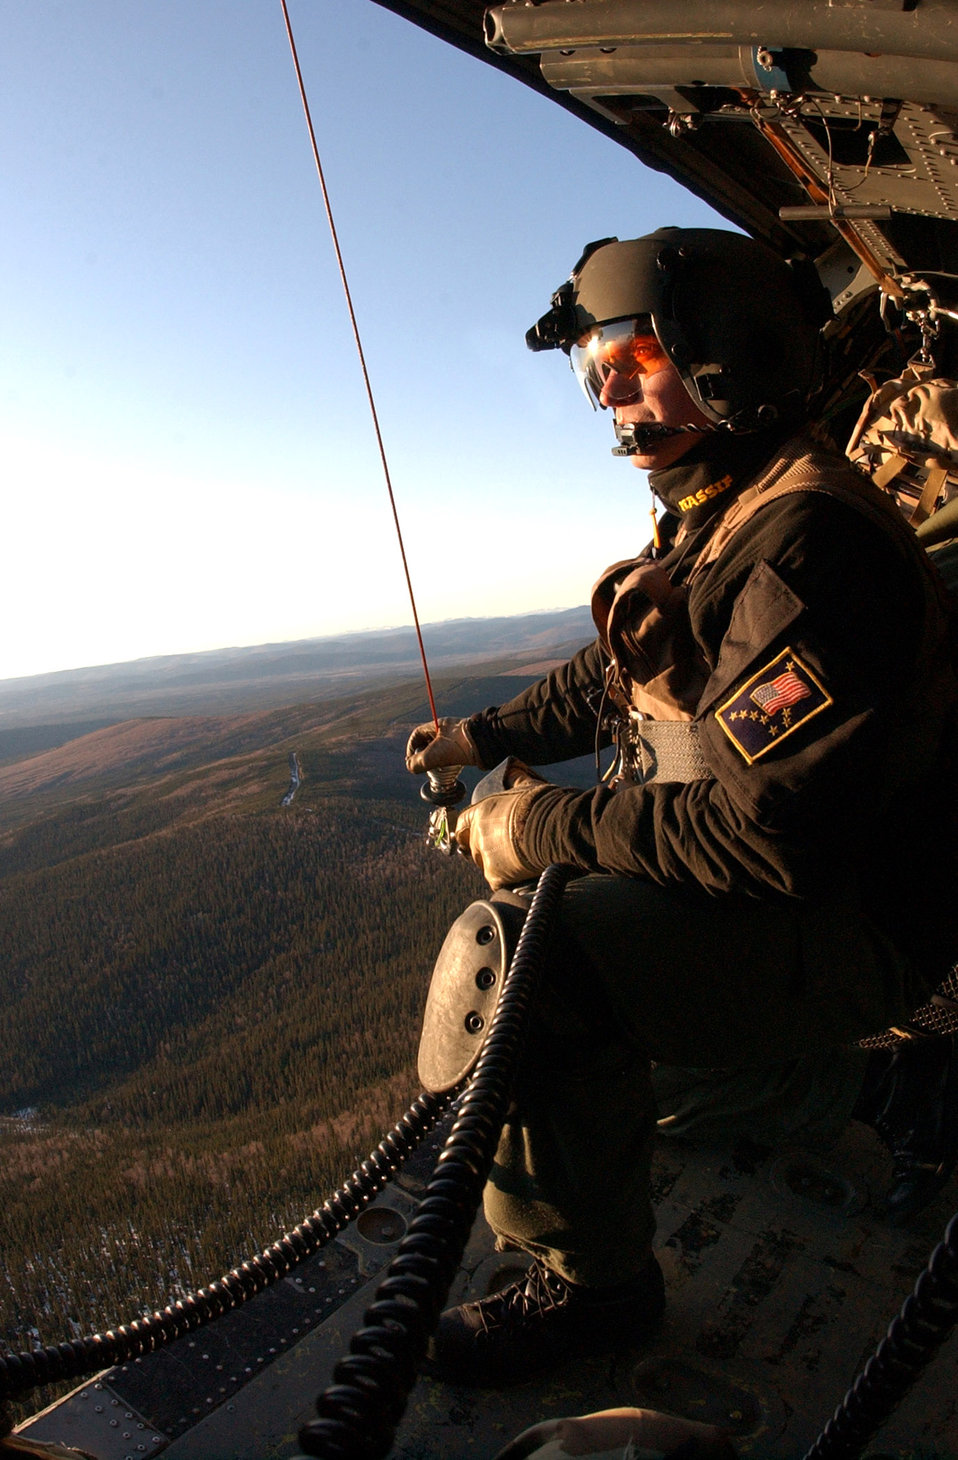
Alaska range, airspace critical to combat training

Staff Sgt. Dave Torrance prepares to lower a hoist from an HH-60G Pave Hawk helicopter to lift a pararescuemen during a combat search and rescue mission April 17 at Eielson Air Force Base, Alaska. Red Flag-Alaska exercises help enhance combat training for U.S. military and coalition forces. Sergeant Torrance is a 210th Rescue Squadron Det. 1 flight engineer.